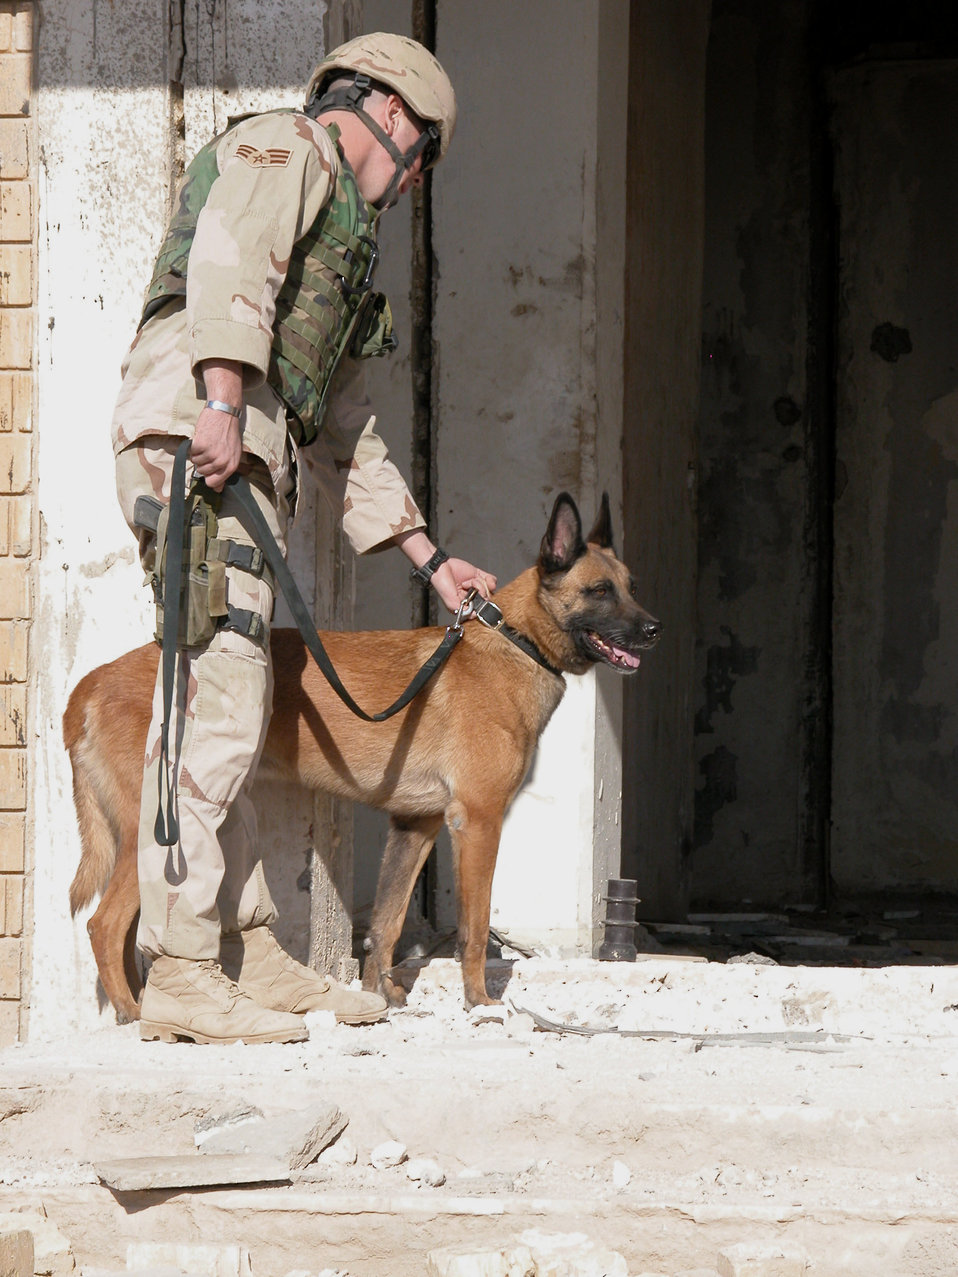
Patrolling the area

TALLIL AIR BASE, Iraq -- Senior Airman Eric Stafford and his partner, Tino, patrol a bombed out building near the perimeter of the base. Tino is trained to detect explosives and is credited with stopping two men who breached the perimeter of the base. Stafford is a military working dog handler here. He and Tino are assigned to Moody Air Force Base, Ga.